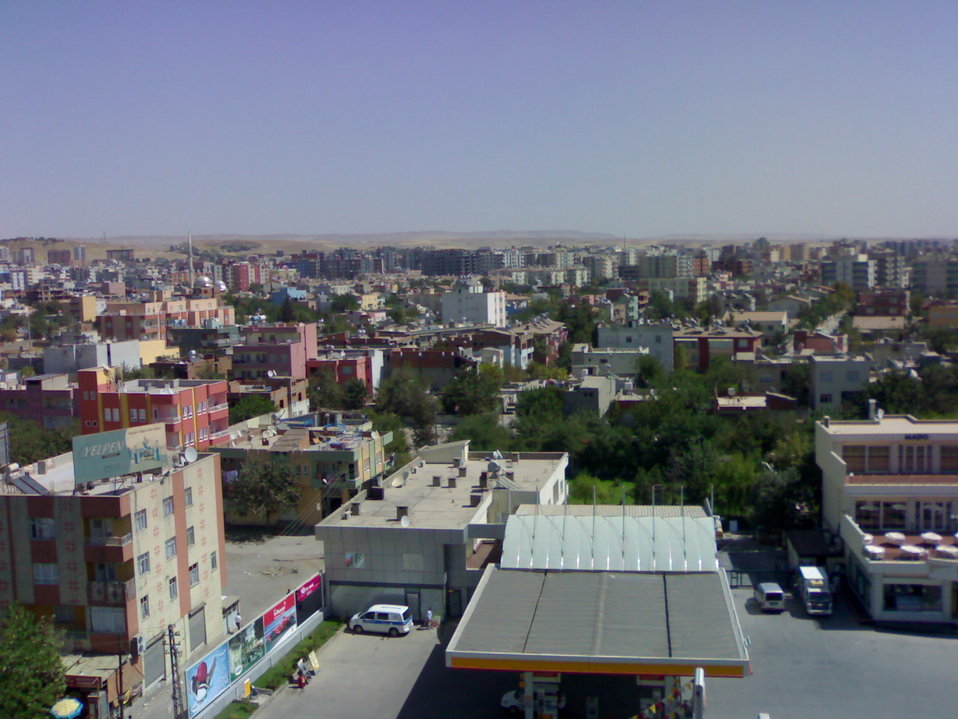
Türkçe: Seyrek İş Hanı'dan çekilmiştir. Ferhat Fidan